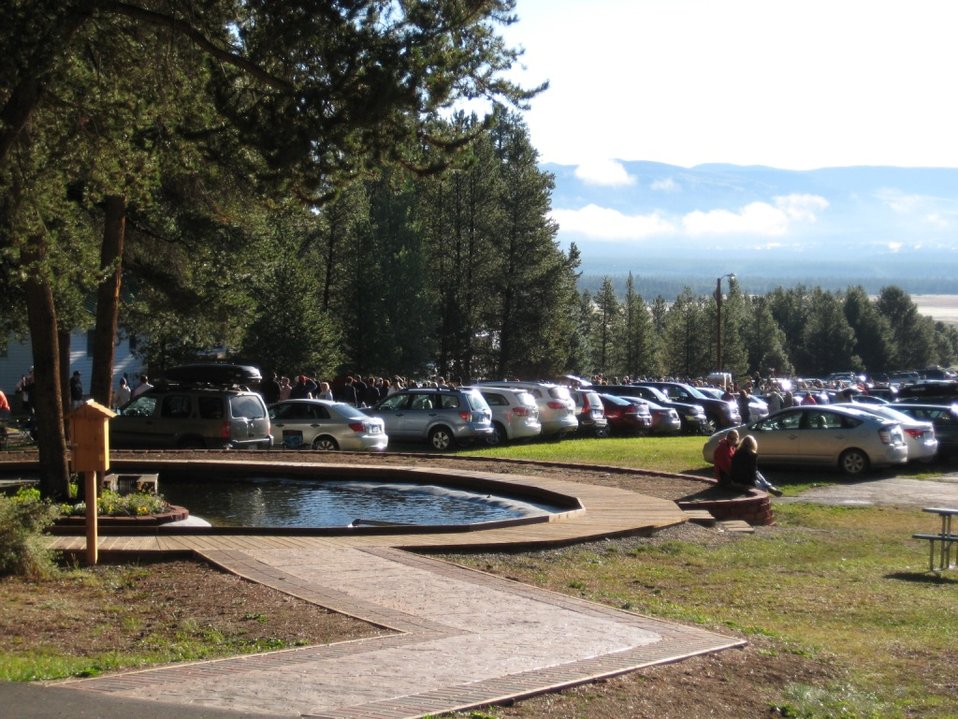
Display pond looking east

Cars parked at Leadville National Fish Hatchery for the Leadville Trail 100 Run which took place on August 20-21st. Six-hundred and twenty five runners started the race.